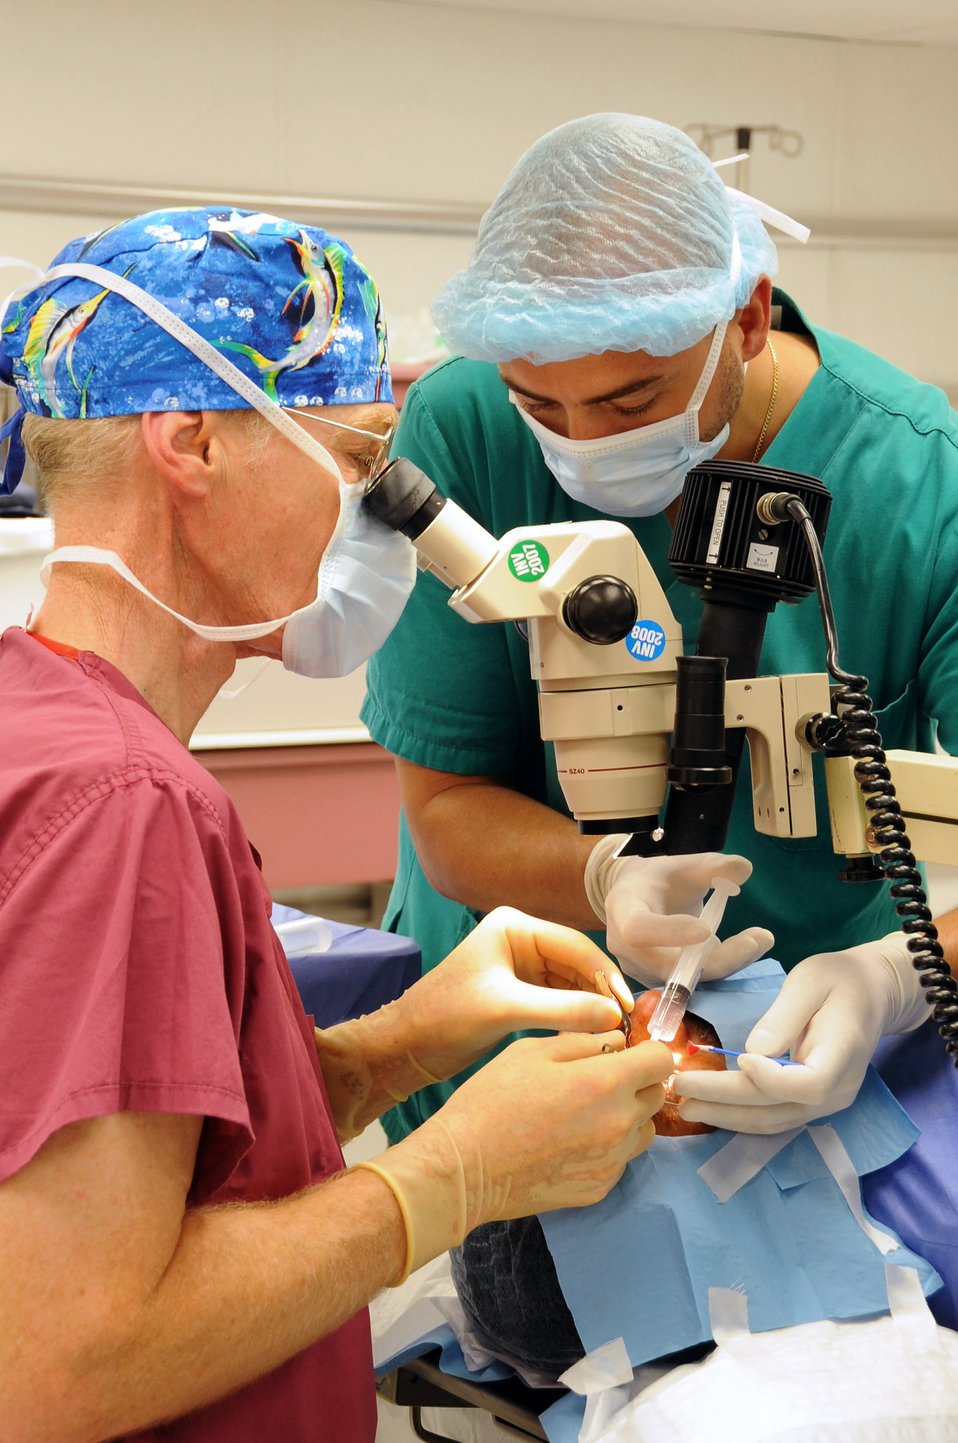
Visionary doctor helps hundreds of Iraqis

Retired Air Force Colonel Stephen Waller, a contract ophthalmologist from Wilford Hall Medical Center, Lackland Air Force Base, Texas, works with his medical team to perform an eye surgery here May 20. His team is comprised of two Iraqi doctor's assistants from the Nasiriyah General Hospital and two provincial reconstruction team members. The doctor came to Iraq to provide eye exams, surgeries and free glasses to hundreds of Iraqis in need. Doctor Waller arrived here May 18 and finished his humanitarian mission four days later.